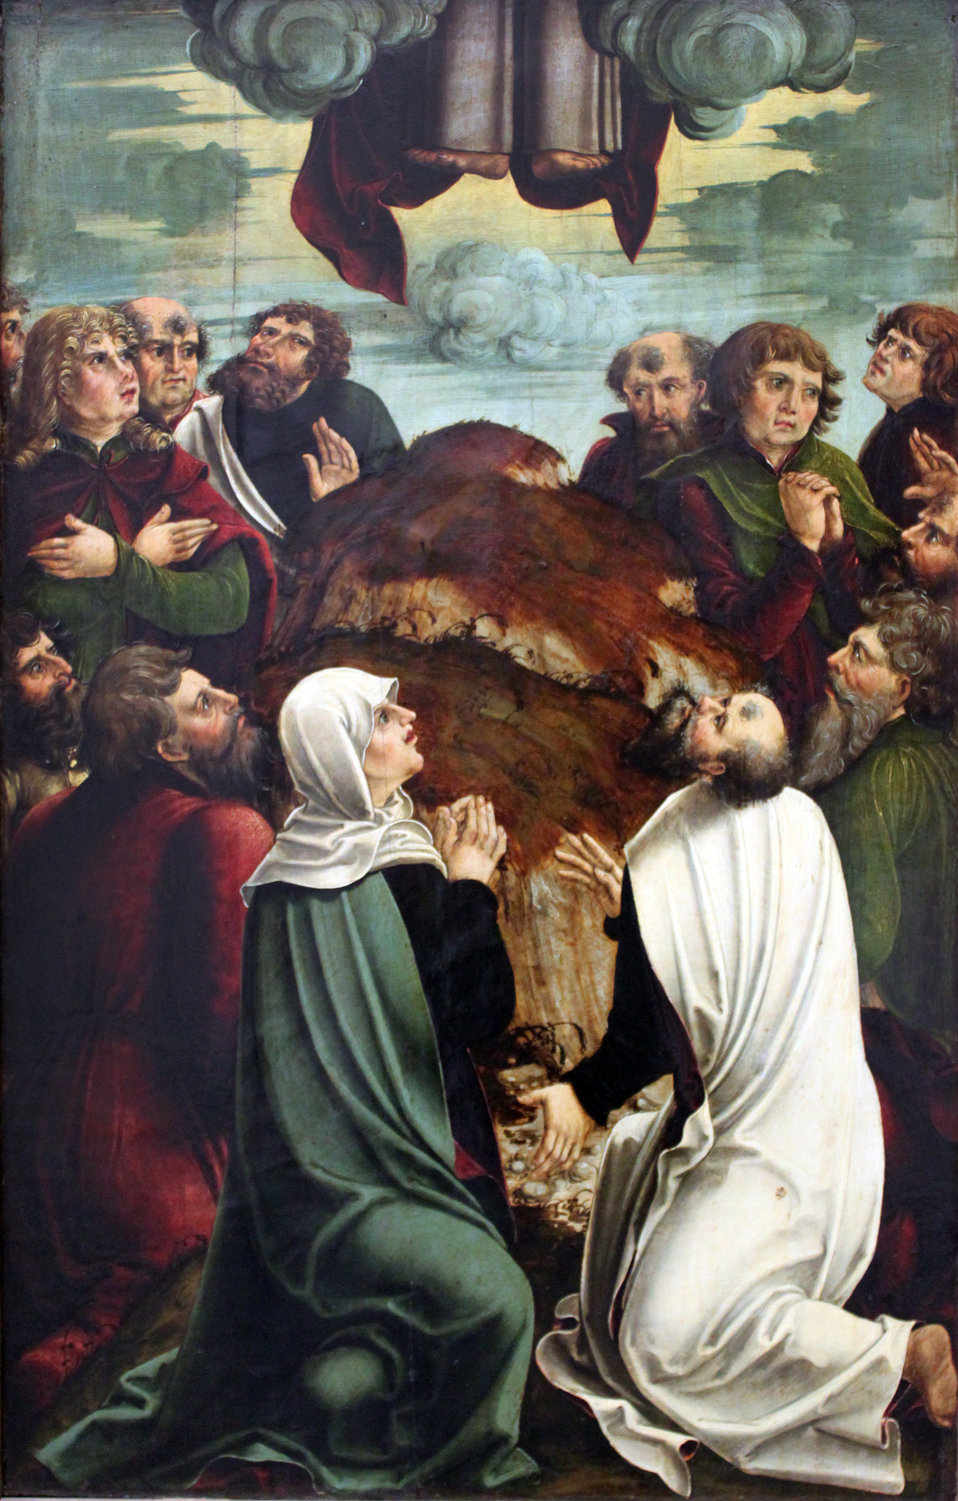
1513 Stoeberl Himmelfahrt Christi anagoria